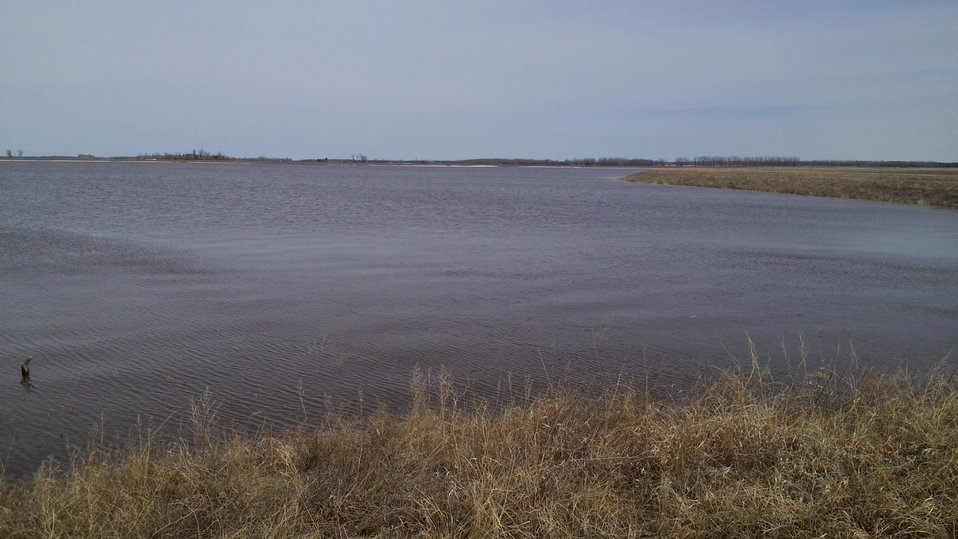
Wetlands all fully recharged and there is plenty of water in the off channel storage (OCS) structure, which is the main flood water holding pond for the project in Thief River Falls, MN on Apr. 27, 2013.